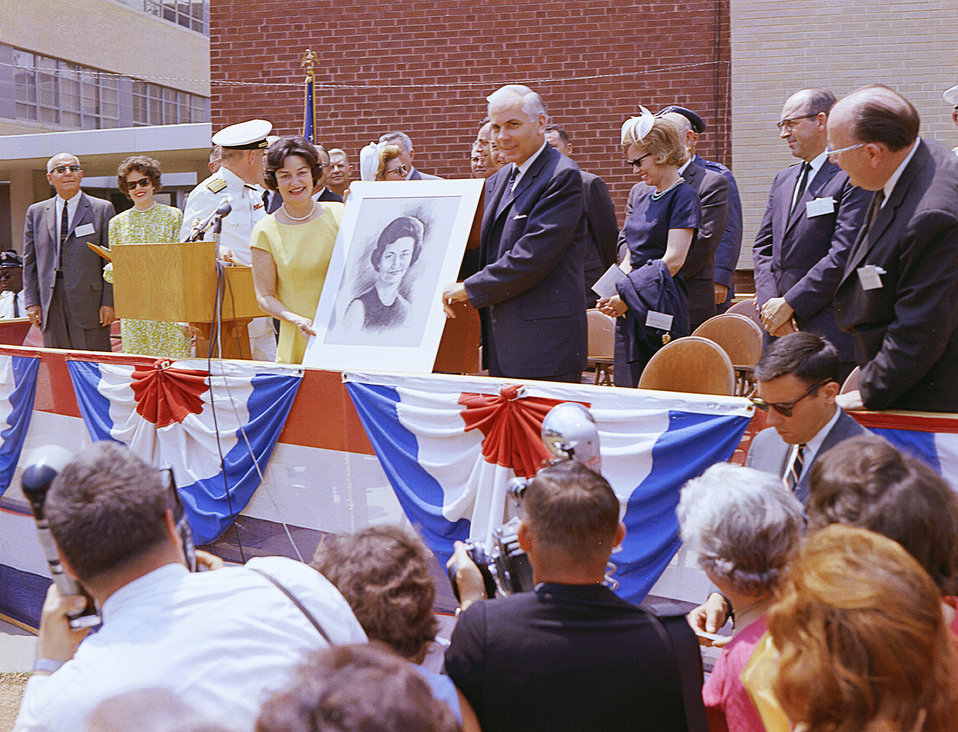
This historic 1964 image depicted former First Lady, Claudia Alta 'Lady Bird' Taylor Johnson, as she was attending a Centers for Disease Control outdoor ground-breaking ceremony, which would lead to the construction of the former Auditorium B, which no longer exists. Assisted by Boisfeuillet Jones, who was then an advisor in the White House, at this point in the ceremony, the First Lady was holding up a portrait she'd received as a gift.